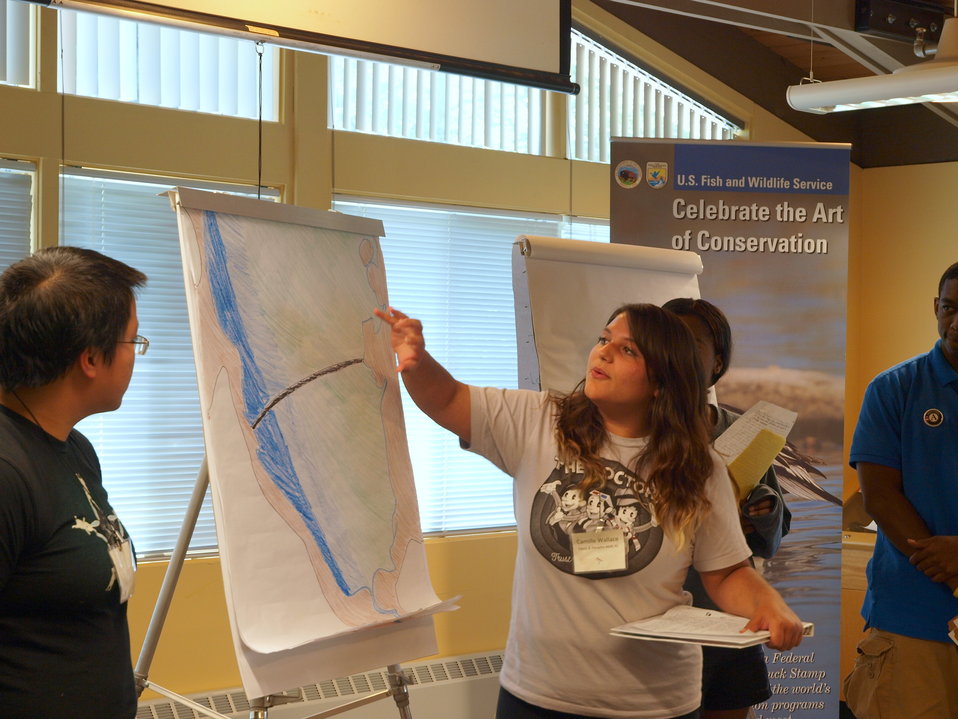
Challenge Project Presentations

Venice and Camille present their Challenge project to the other interns, mentors and staff.